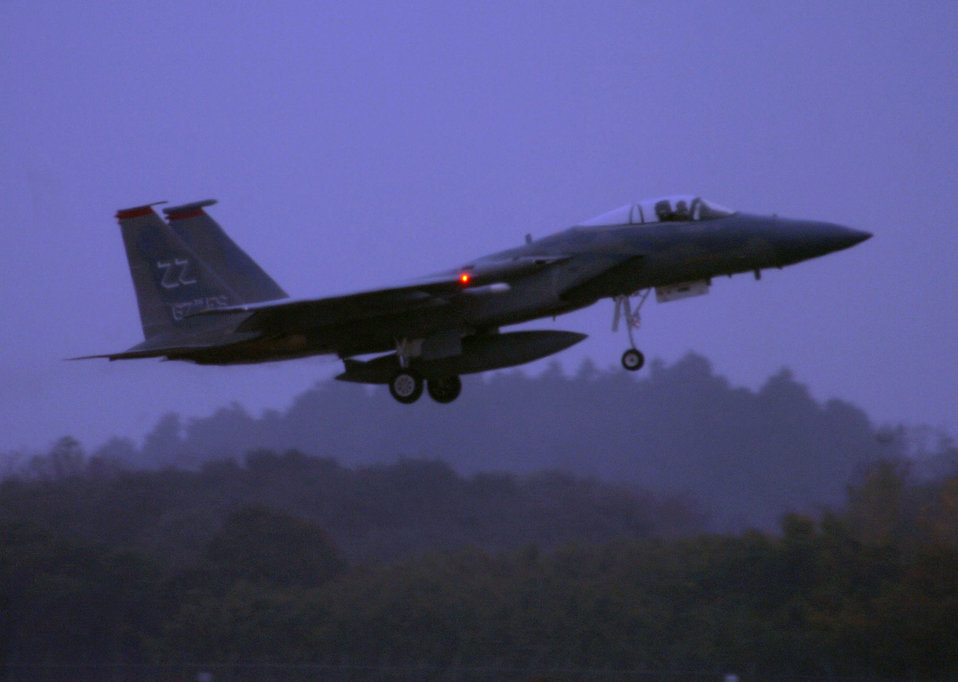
Eagles in flight

HYAKURI AIR BASE, Japan -- An F-15 Eagle from the 67th Fighter Squadron at Kadena Air Base, Japan, takes off for a mission here during a Keen Sword exercise Nov. 16. Keen Sword is a bilateral defense exercise designed to practice defending Japan against foreign aggression.